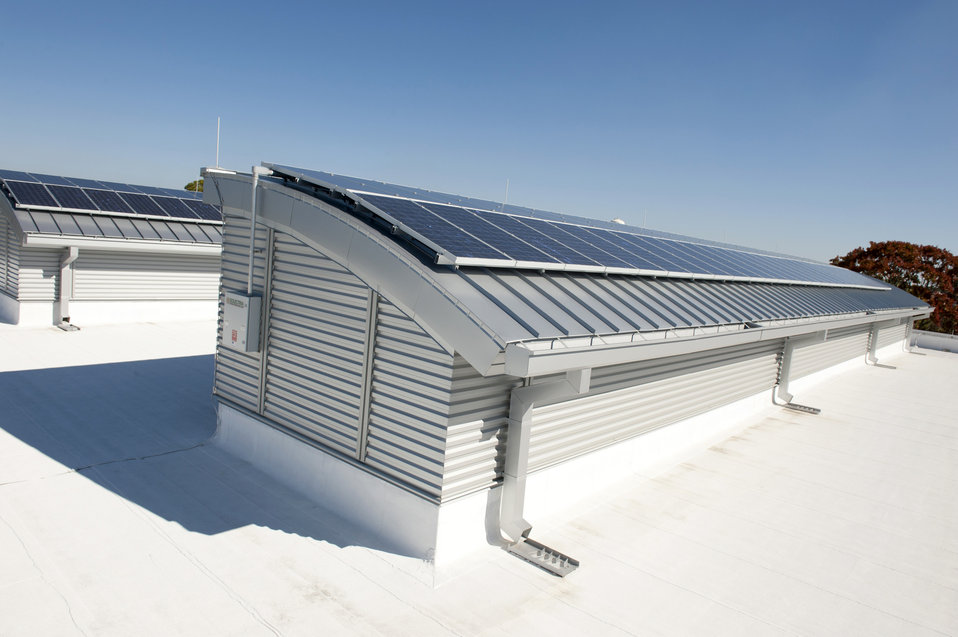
Green roof

Officials at Tyndall Air Force Base, Fl., opened a new fitness center Aug. 20, 2010, that is expected to reach the U.S. Green Building Council's Leadership in Energy and Environmental Design Platinum level thanks to energy savings and environmentally friendly technologies, including these solar panels, or photovoltaics. The building also features cool-roof technology and a solar-generated hot-water system which are expected to help achieve a 9-percent energy savings for the building.